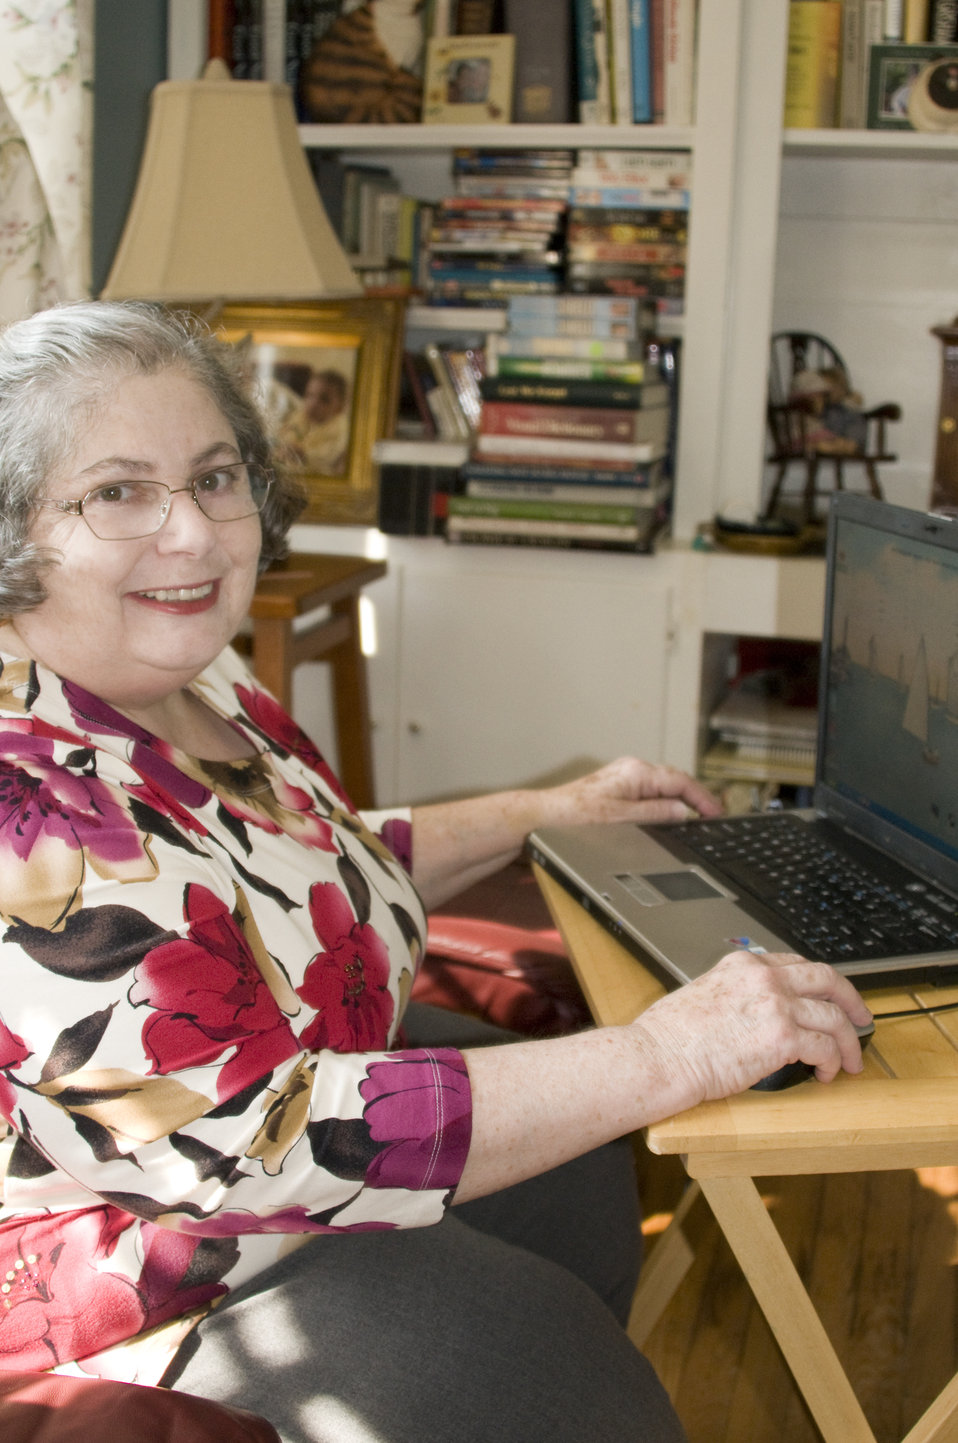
Seated at a small folding table, atop which was a laptop computer, this female rheumatoid arthritis patient was shown logging on to her workstation. With the aid of a sock-donning device, she had just dressed her feet in stockings and zipper-laced sneakers. Living with arthritis does not necessarily mean existing in a non-functional state.